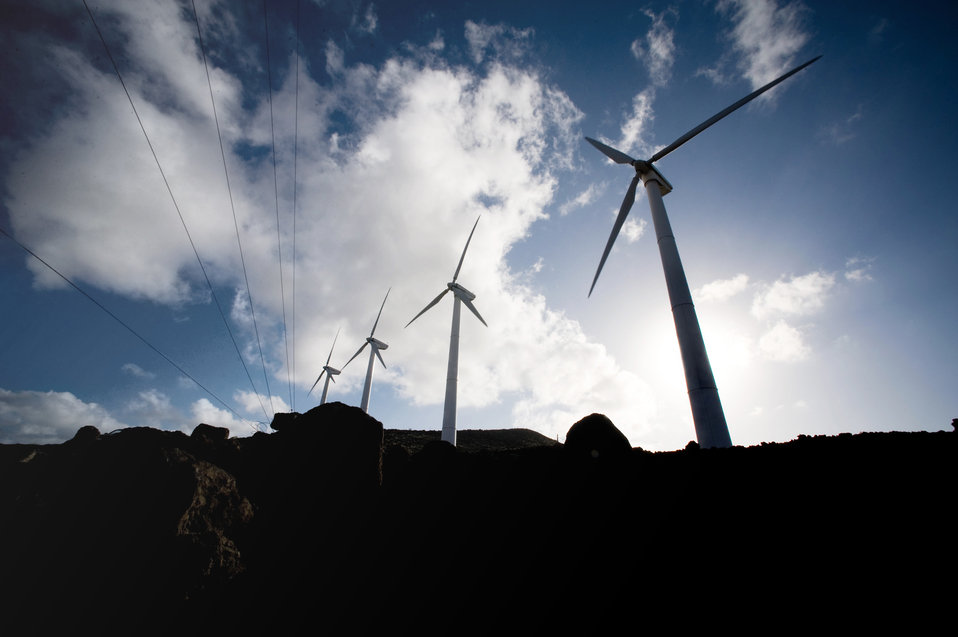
Remote base uses natural energy to power facilities

Four 225-kilowatt wind turbines help produce power for Ascension Auxiliary Airfield, a small base belonging to the 45th Space Wing. The base is located on the British-owned island of Ascension, which is positioned in the South Atlantic Ocean several thousand miles from the coast of Africa.